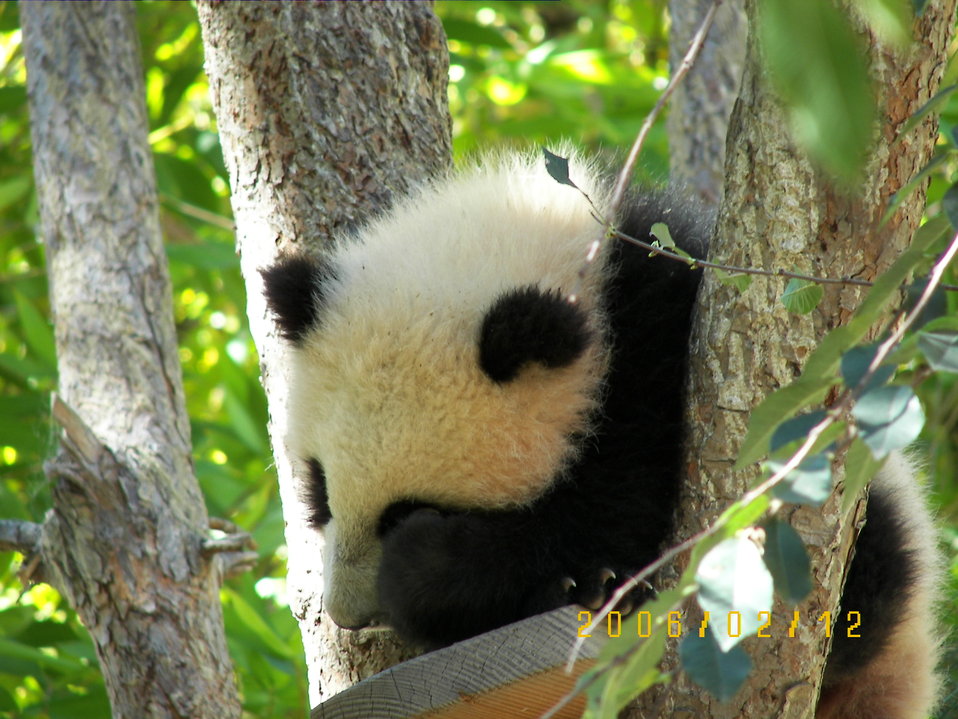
Abhishek Mitra